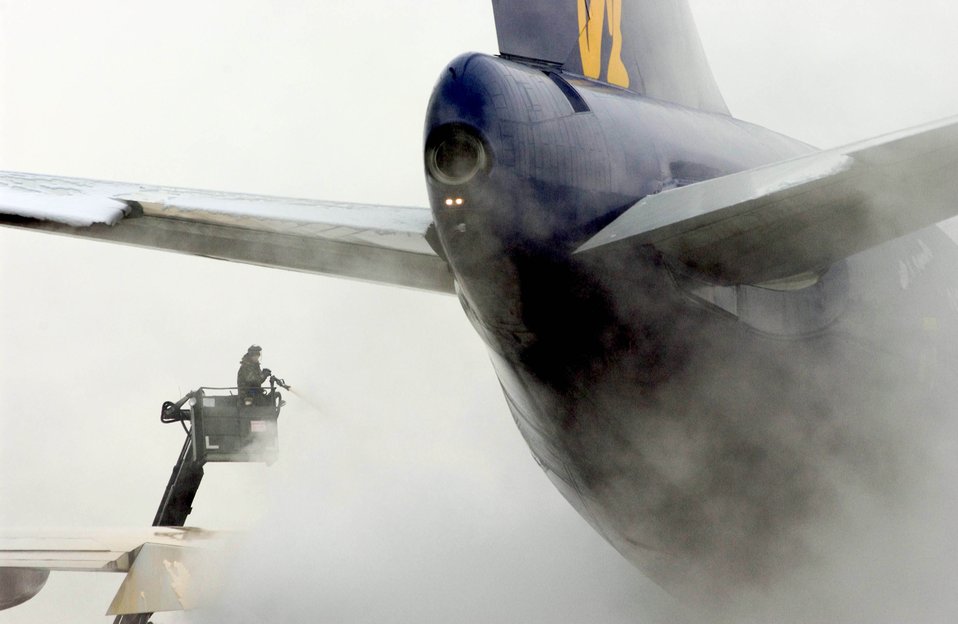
Snow job

RAMSTEIN AIR BASE, Germany -- High-pressure air and glycol are used to remove snow from an aircraft here early Nov. 10. A little more than an inch of snow blanketed the area. Glycol, an environmentally safe product, coats aircraft and helps prevent snow from accumulating.